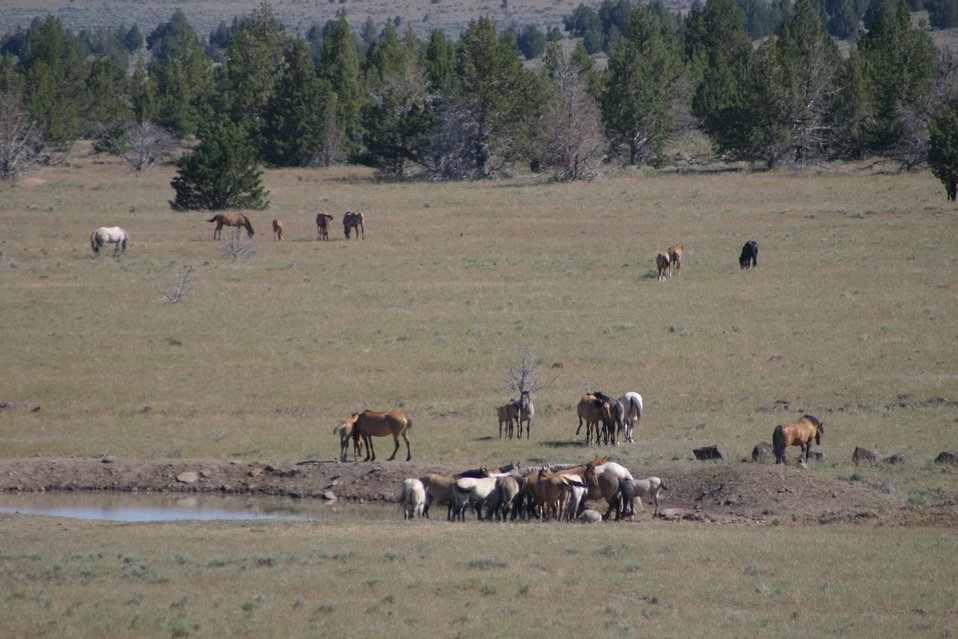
Wild Horse(s) in the Kiger Wild Horse Herd Management Area.